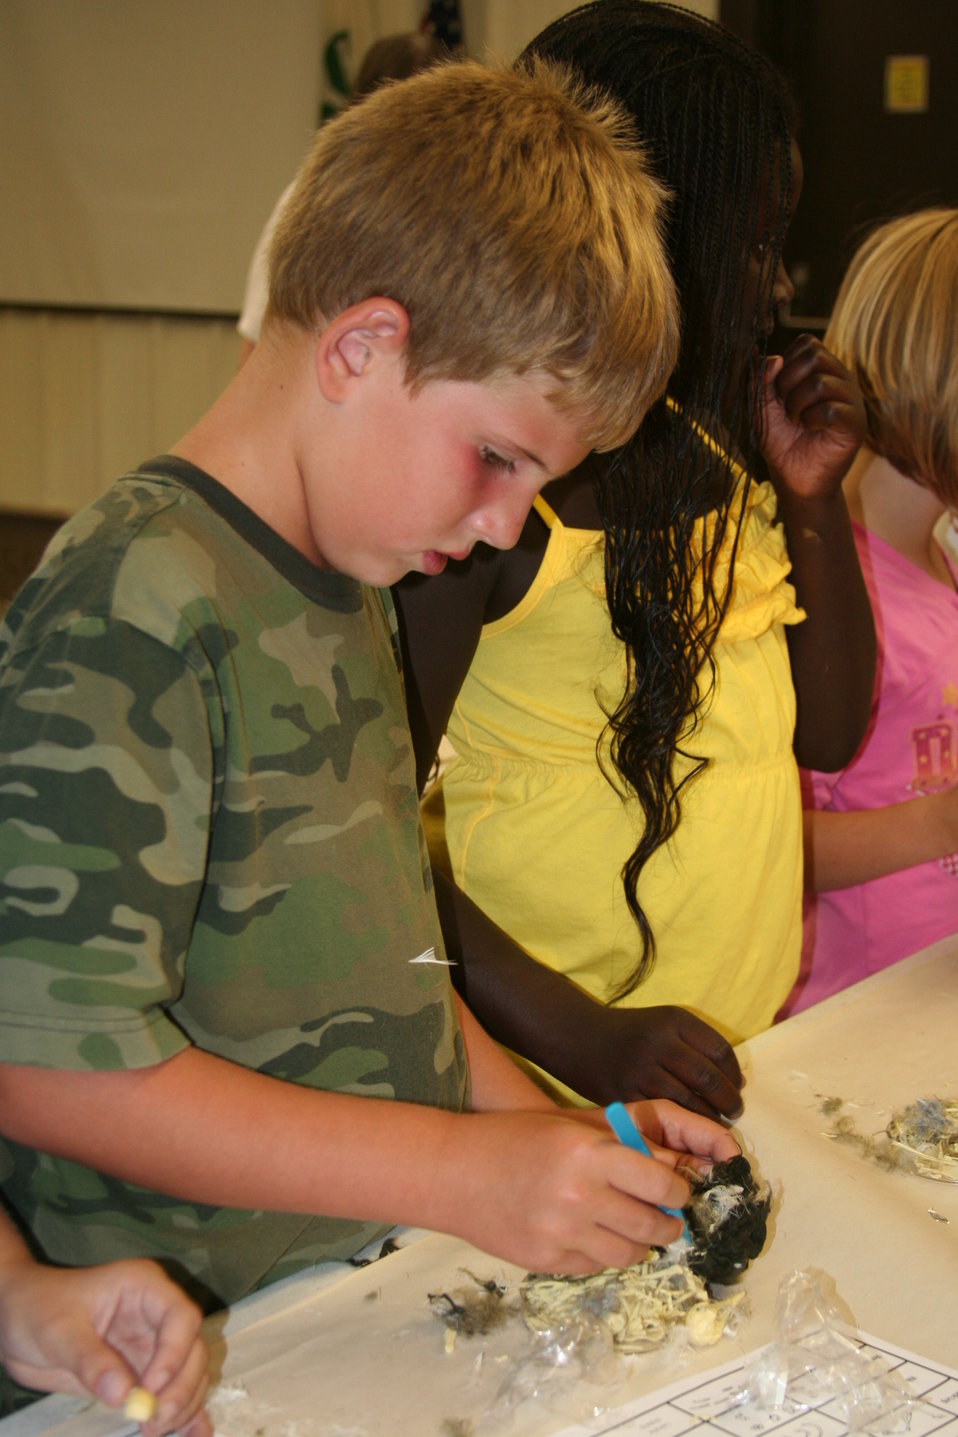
Creatures of the Night 2011

More owl pellet dissection.